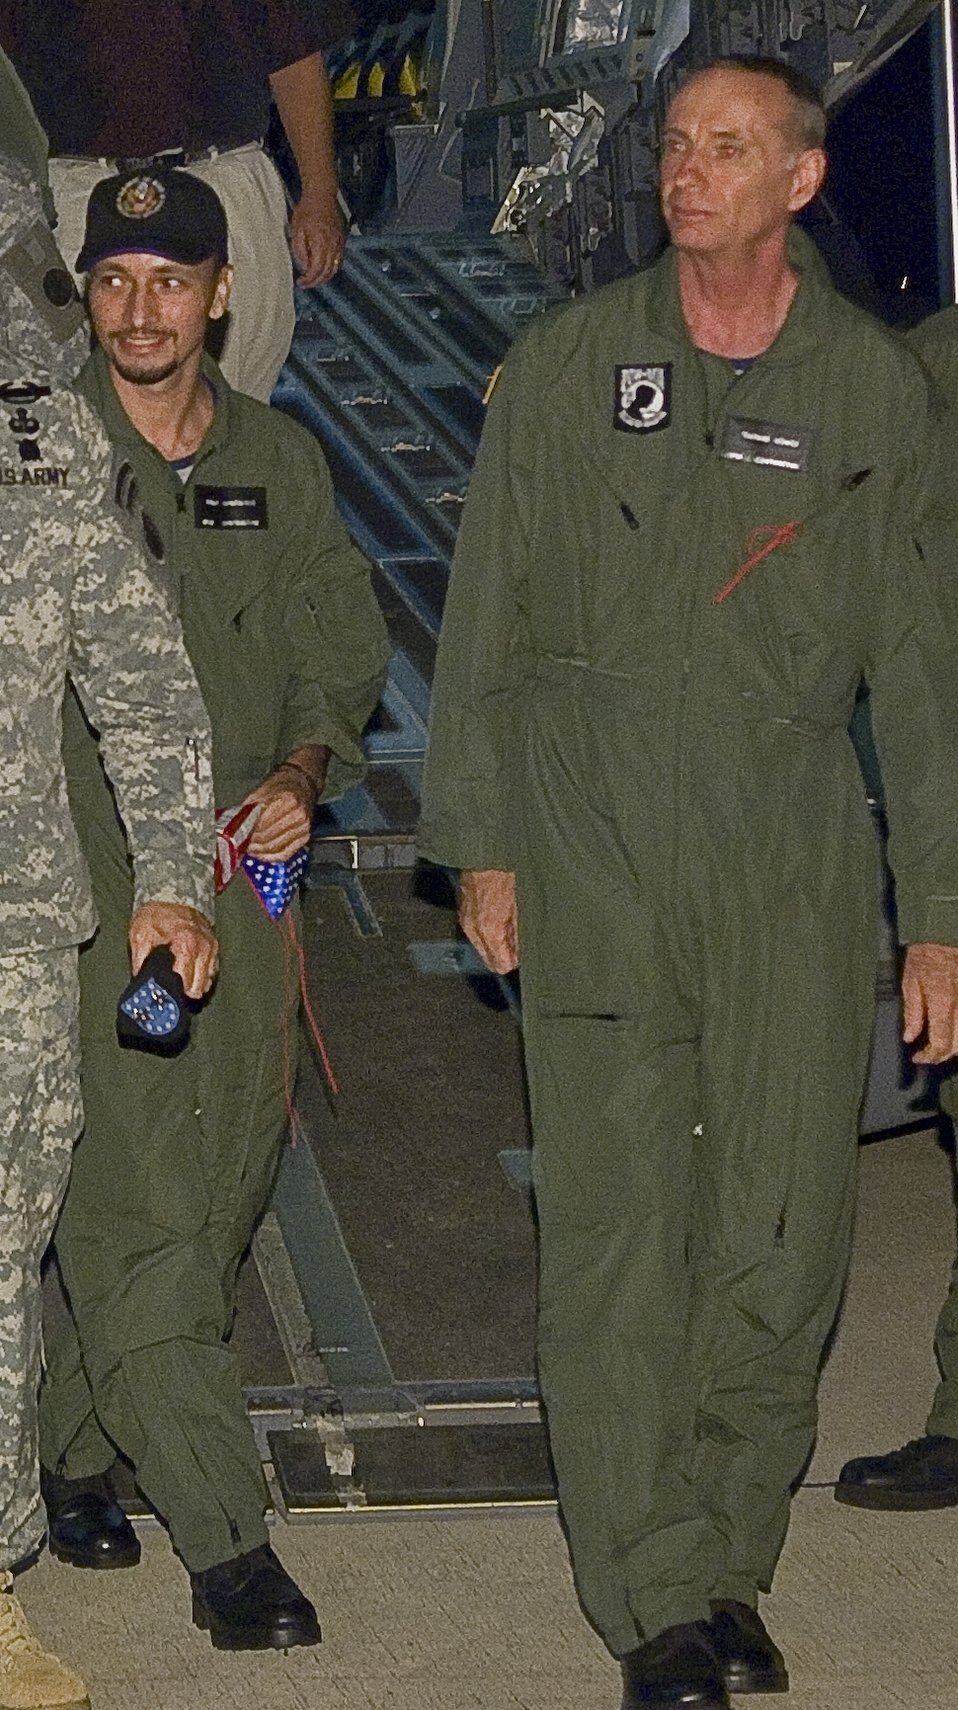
Hostages Arrive in U.S.

Mark Gonsalves (left) and Thomas Howes, two contactors rescued after being held captive by the leftist Revolutionary Armed Forces of Colombia, step off a C-17 Globemaster III and onto U.S. soil July 2 at Lackland Air Force Base, Texas. The men were held captive for five years.